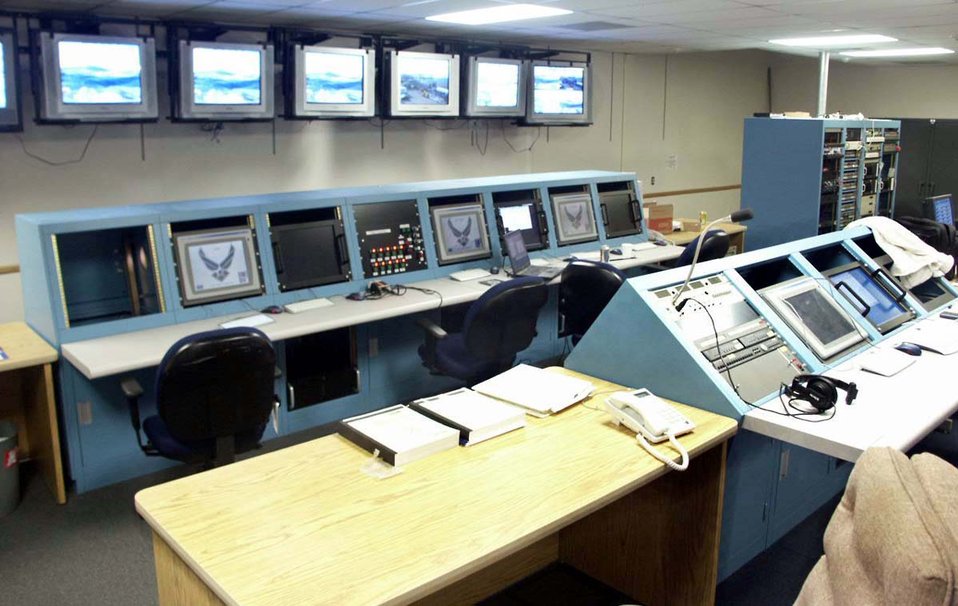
Stand gets facelift

EDWARDS AIR FORCE BASE, Calif. -- The state-of-the art control room at the research site here is ready for the testing of next-generation rocket engines. The rocket test stand facility here recently underwent an $18.5-million facelift.